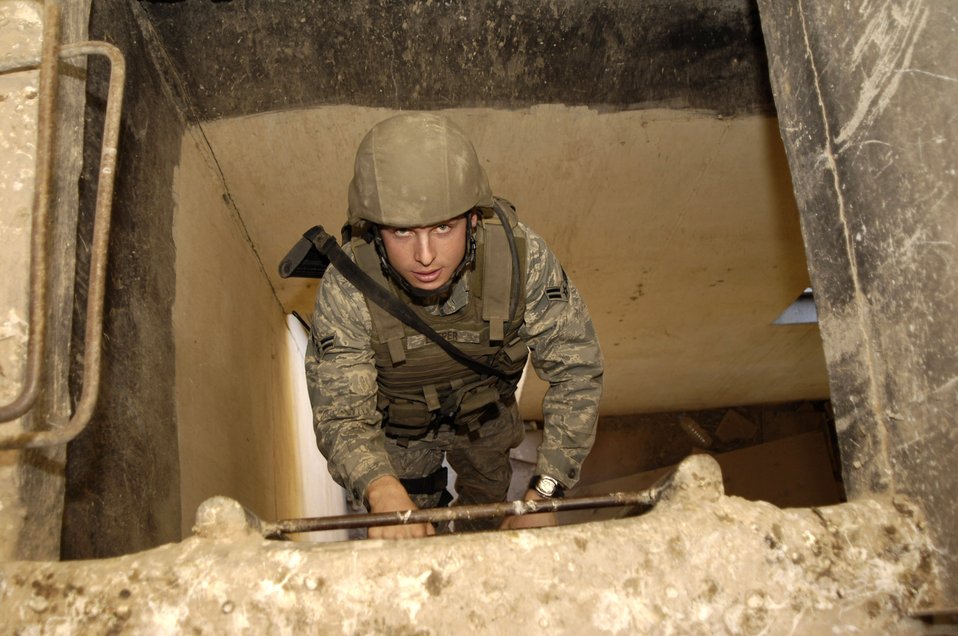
Watching for the enemy

Airman 1st Class Matt Sleeper climbs to the top of a lookout point where his anti-sniper team will set up surveillance for terrorist snipers. Airman Sleeper is assigned to the 506th Expeditionary Security Forces Squadron at Kirkuk Air Base, Iraq.